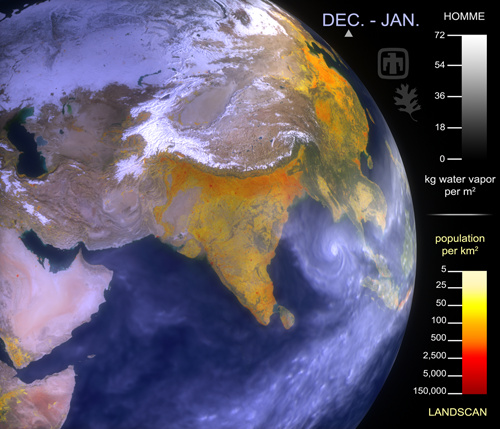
At Oak Ridge National Laboratory, the proper simulation of the distribution of water vapor in the climate system is essential to the accurate treatment of the hydrological and the planetary radiation budget. These images show the simulation monthly averaged distribution of the total column water vapor from a high-resolution configuration of the Community Climate System Model Community Atmospheric Model.